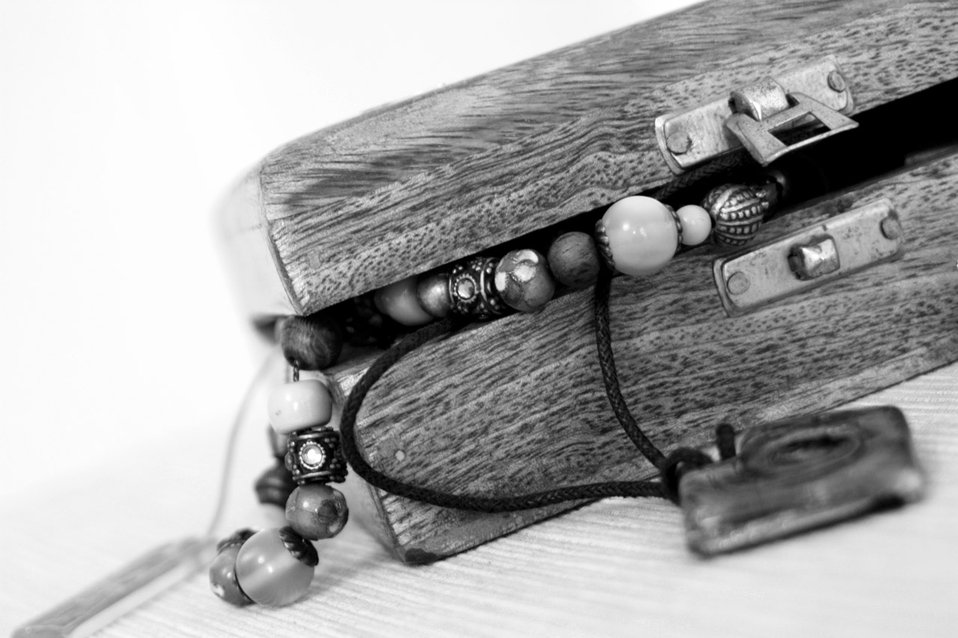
Jewellery box.